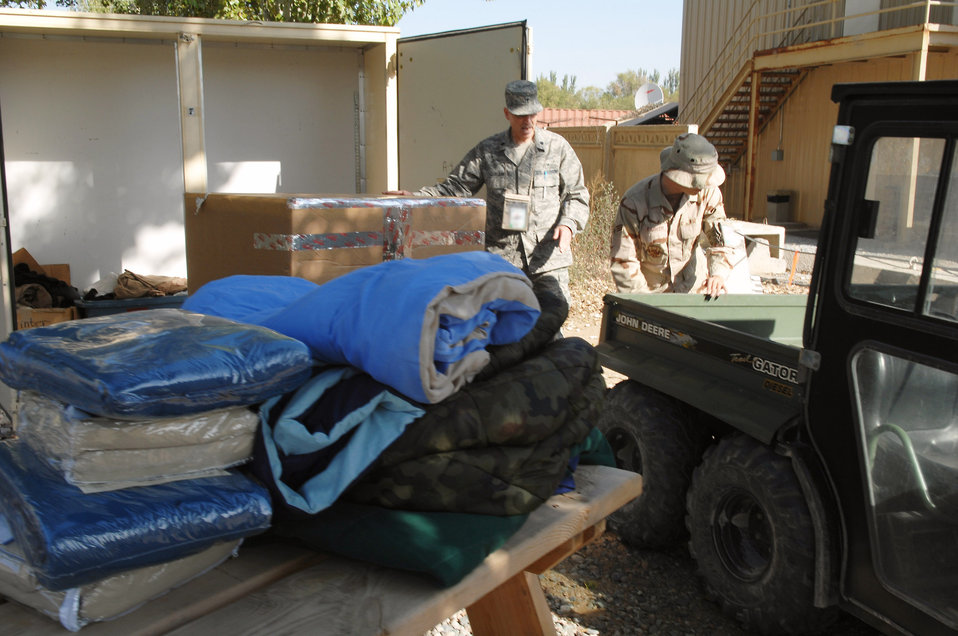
Manas Air Base provides aid to earthquake victims

Lt. Col. Tim Bejian and Senior Airman Alex Farver help load boxes of blankets and clothes as a part of a humanitarian aid shipment intended for survivors of an Oct. 5 earthquake in southern Kyrgyzstan. Airmen from Manas Air Base, Kyrgyzstan, sent thousands of pounds of aid, Oct. 8, that included pallets of food rations, bottled water, surplus military cold weather gear and more than 120 boxes containing 3,000 pounds of adult and children's winter clothing, blankets and toys. A call for personal donations resulted in more than 40 Airmen donating their own blankets they deployed here with. Colonel Bejian is the 376th Air Expeditionary Wing chaplain. Airman Farver is assigned to the 376th AEW public affairs.